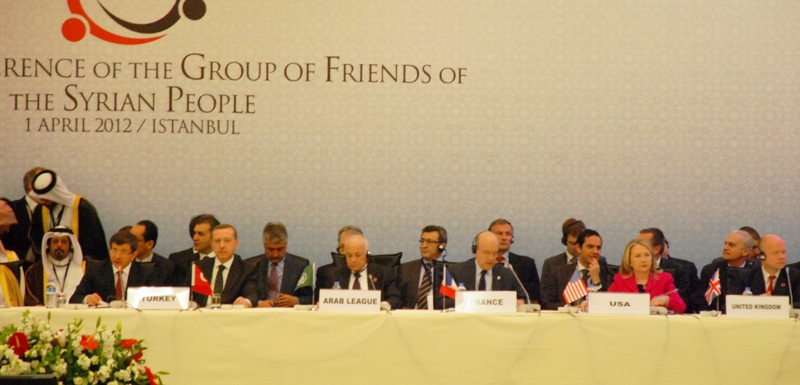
Friends of the Syrian People Meeting in Turkey

U.S. Secretary of State Hillary Rodham Clinton attends the Second Conference of the Group of Friends of the Syrian People at the Istanbul Congress Center in Istanbul, Turkey, April 1, 2012.